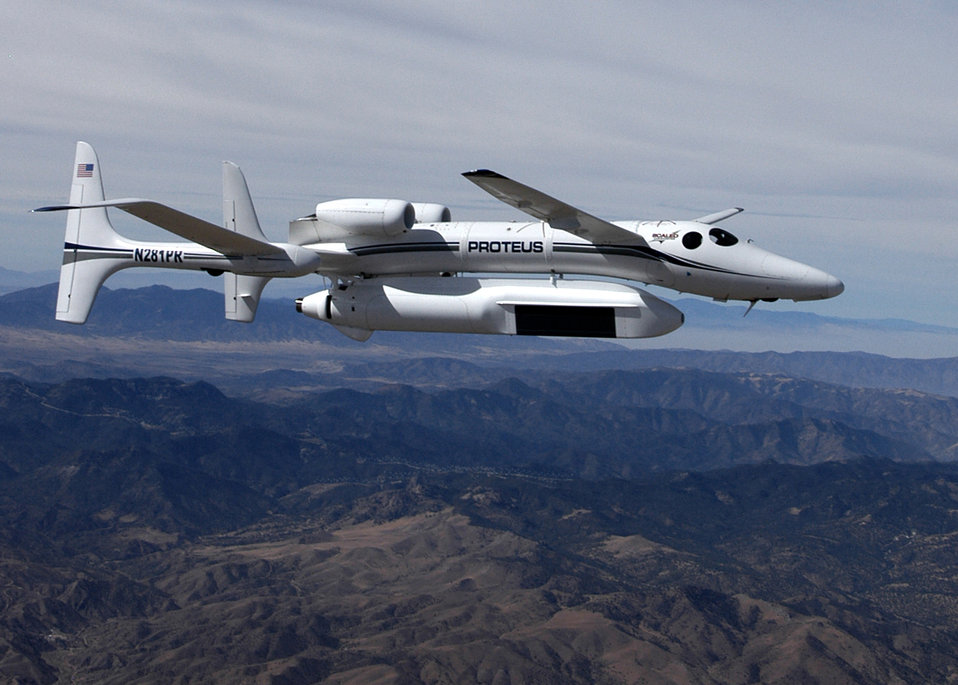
ESC completes key flight milestone for advanced radar system

A Proteus aircraft flies over Southern California carrying the Global Hawk variant of the new Multiplatform Radar Technology Insertion Program radar. Members of the 851st Electronic Systems Group recently reached a key flight milestone for MP-RTIP by completing Radar System Level Performance Verification on two modes. Program officials aim to turn the sensor over to Global Hawk Air Force 18, the service's Block 40 test bed.